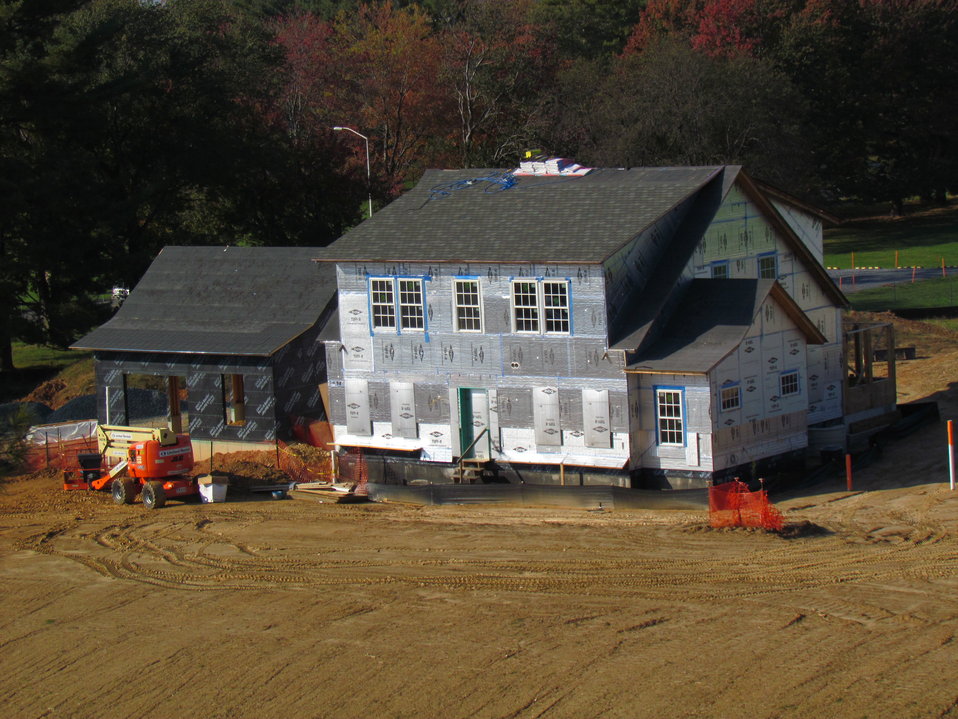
Net-Zero Energy Residential Test Facility - Photo showing front of facility with a portion of the windows installed. Detached garage is covered with air/moisture barrier material.